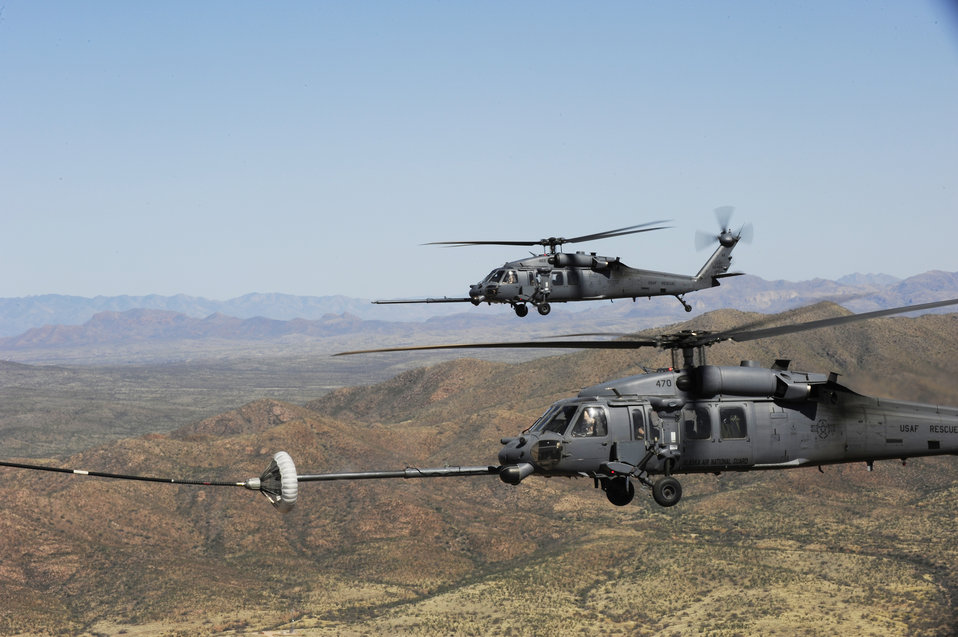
Angel Thunder 2010

HH-60 Pave Hawks refuel over the desert surrounding Davis-Monthan Air Force Base, Ariz., April 15, 2010, during Angel Thunder 2010. Angel Thunder 2010 is an Air Combat Command-sponsored exercise, and will be the largest personnel recovery and combat search and rescue exercise to date, combining Department of Defense and non-DOD assets.